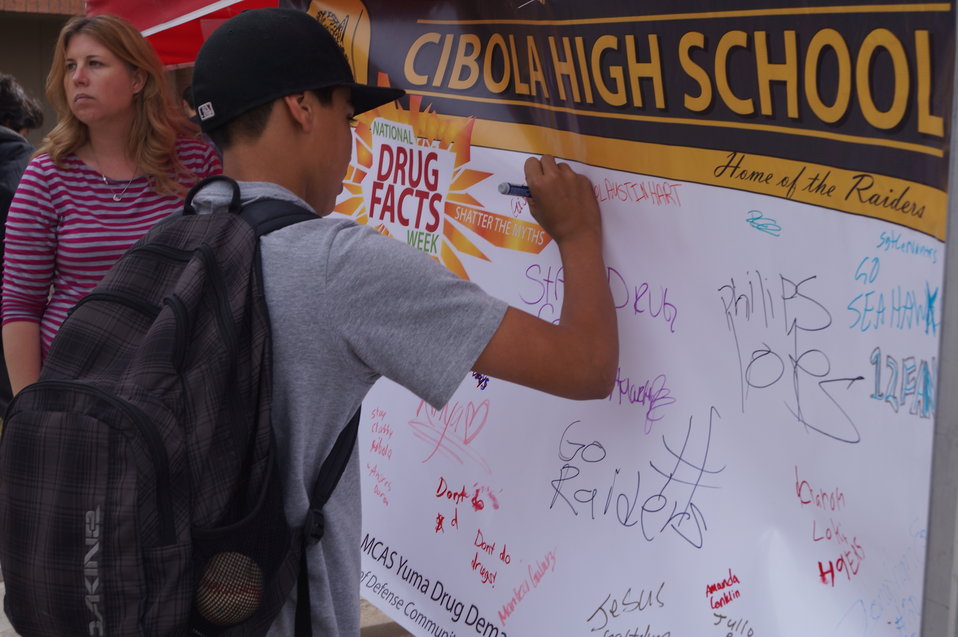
Nationa Drug Facts Week - CIBOLA HS

The Drug Demand Reduction Program out of Yuma, Arizona held numerous events at local schools to support NIDA's National Drug Facts Week, Jan. 27-Feb. 2 2014. Teens participated in drug awareness games, and helped to Shatter the Myths about teen substance abuse.